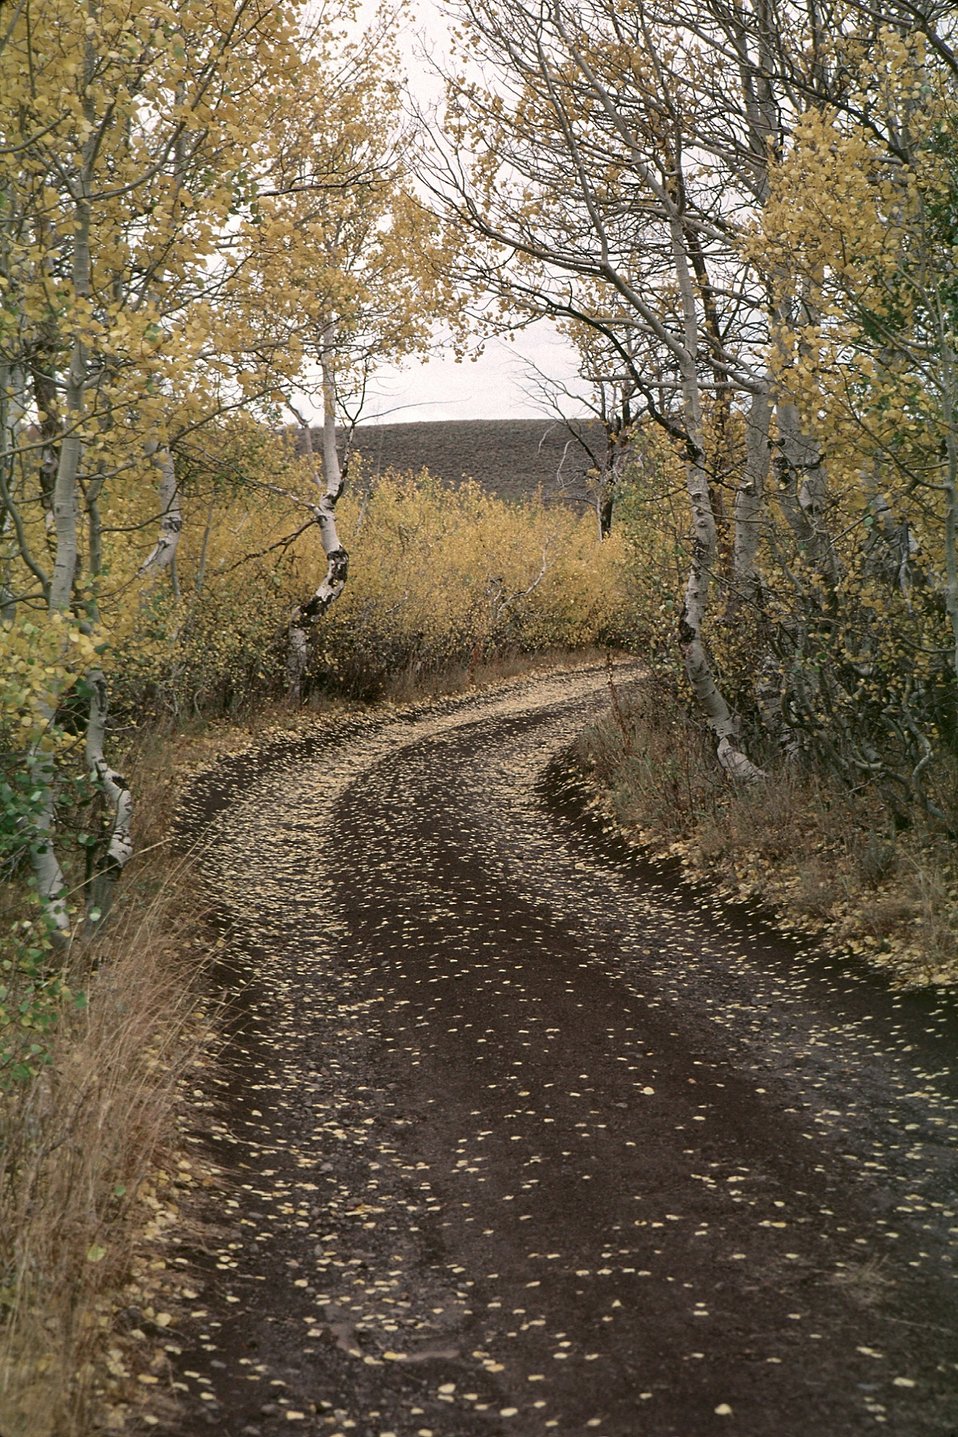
Road to State Cabin at Fish Lake Campground, Steen's Mountain.